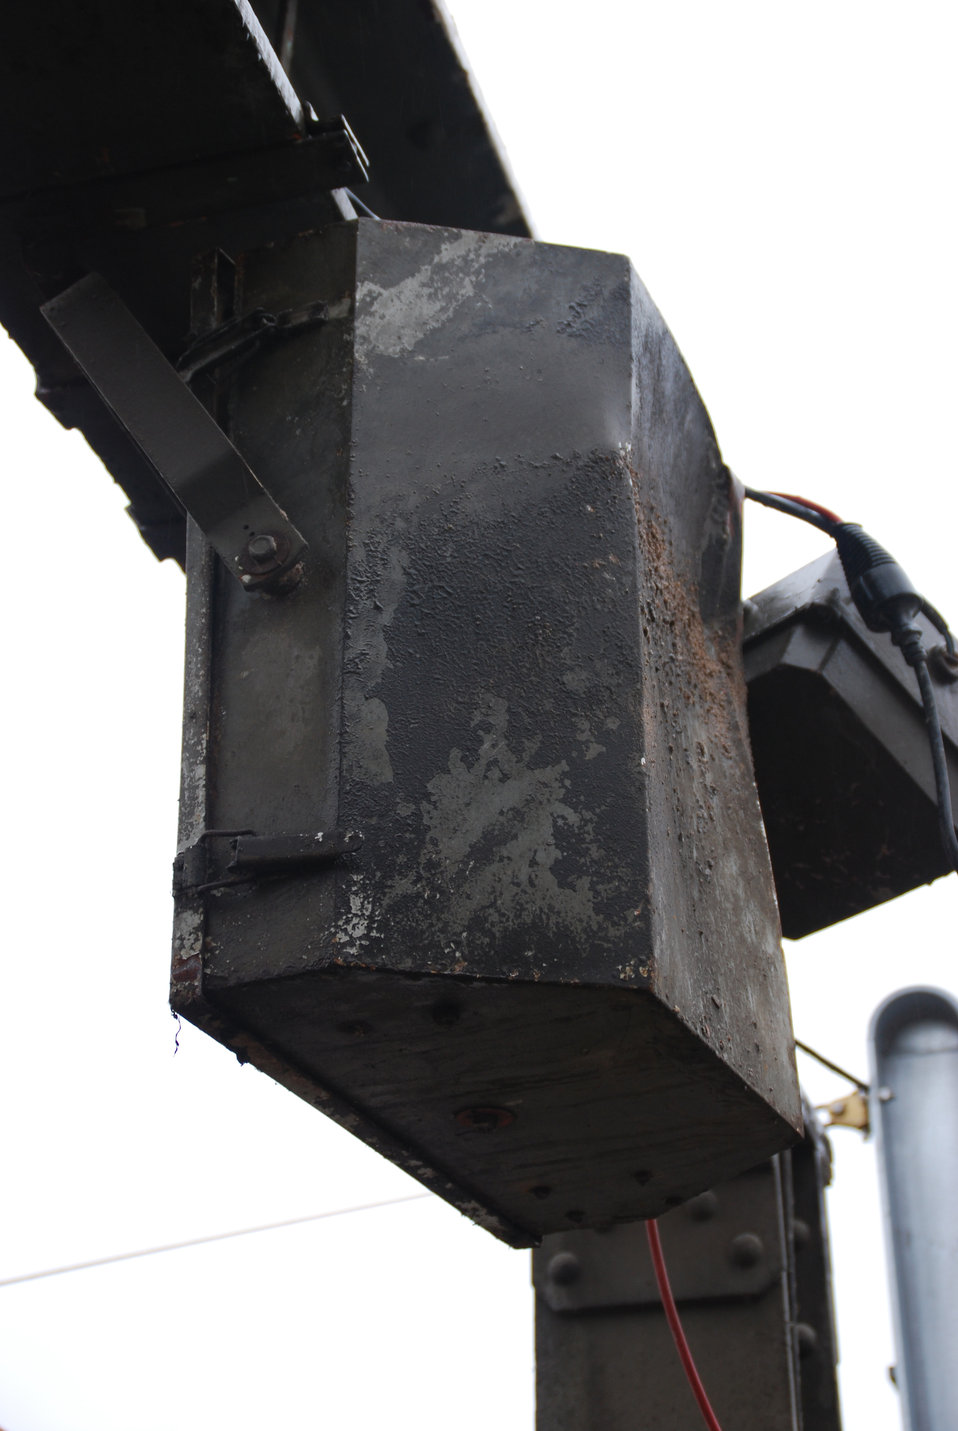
Abriss Bahnhofstunnel Frankfurt (Oder)